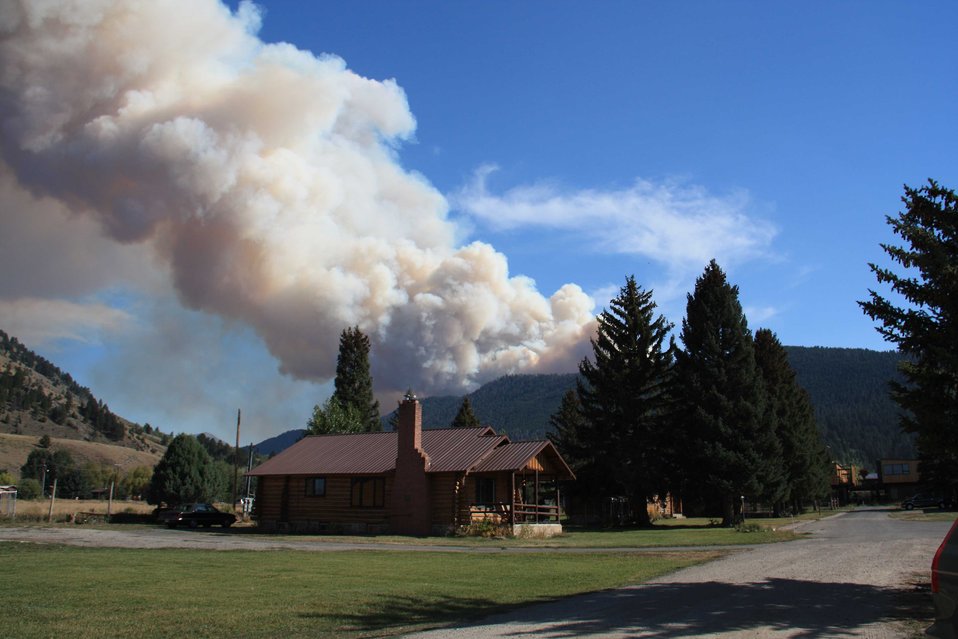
Too Close for Comfort

The fire could easily be seen from the refuge administrative office complex as the head of the fire advanced to the north and east of its origin. An evacuation advisory was in effect for several days for portions of East Jackson.

Credit: USFWS / Tony Hough, National Elk Refuge volunteer